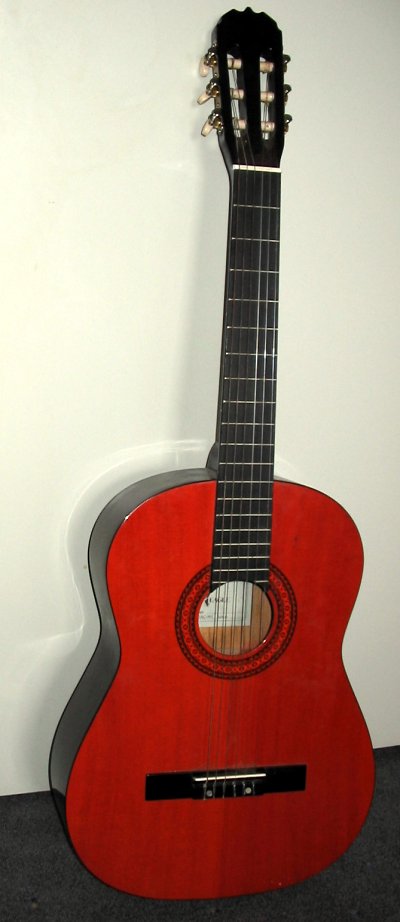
A guitar ubt